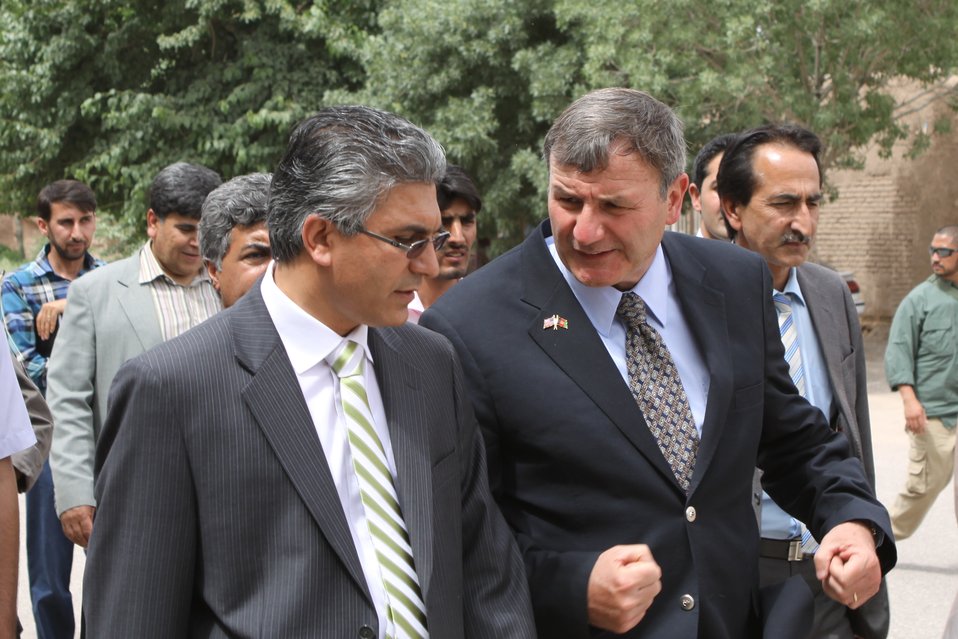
100525 Hirat Marble Conference 688